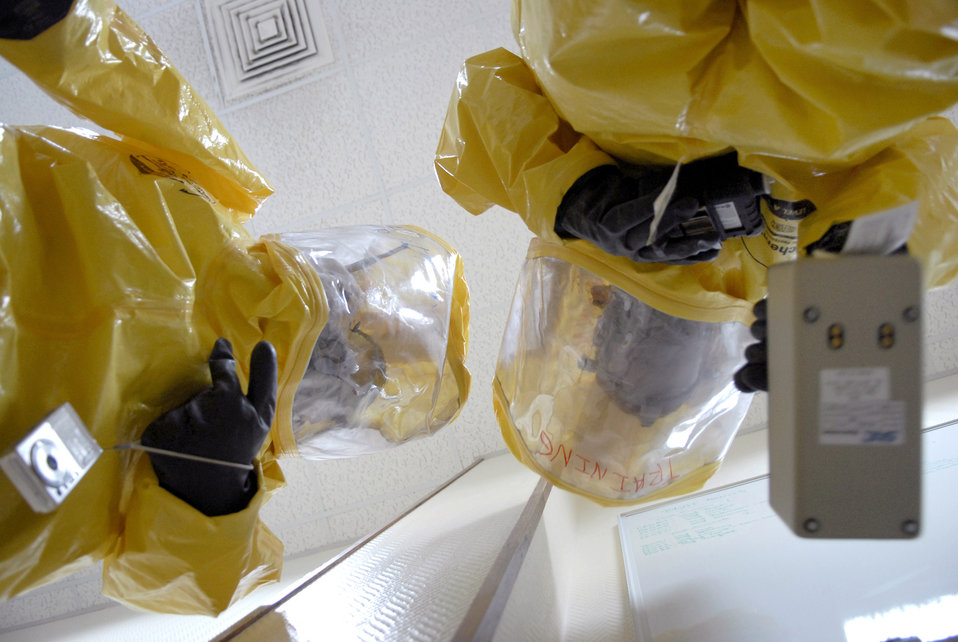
Identifying dangerous substances

Senior Airman Carrie Gay (left) and Staff Sgt. Trevor Fettig use a GR135 detection system to read radiation levels during a unit exercise March 27 at an air base in Southwest Asia. They are readiness and emergency management journeymen with the 379th Expeditionary Civil Engineer Squadron. Airmen with the readiness and emergency management team train frequently in different environments to be more familiar when dealing with unknown locations and circumstances. Airman Gay hails from Sacramento, Calif., and is deployed from McConnell Air Force Base, Kan. Sergeant Fettig is from Lompoc, Calif., and is deployed from Travis AFB, Calif.